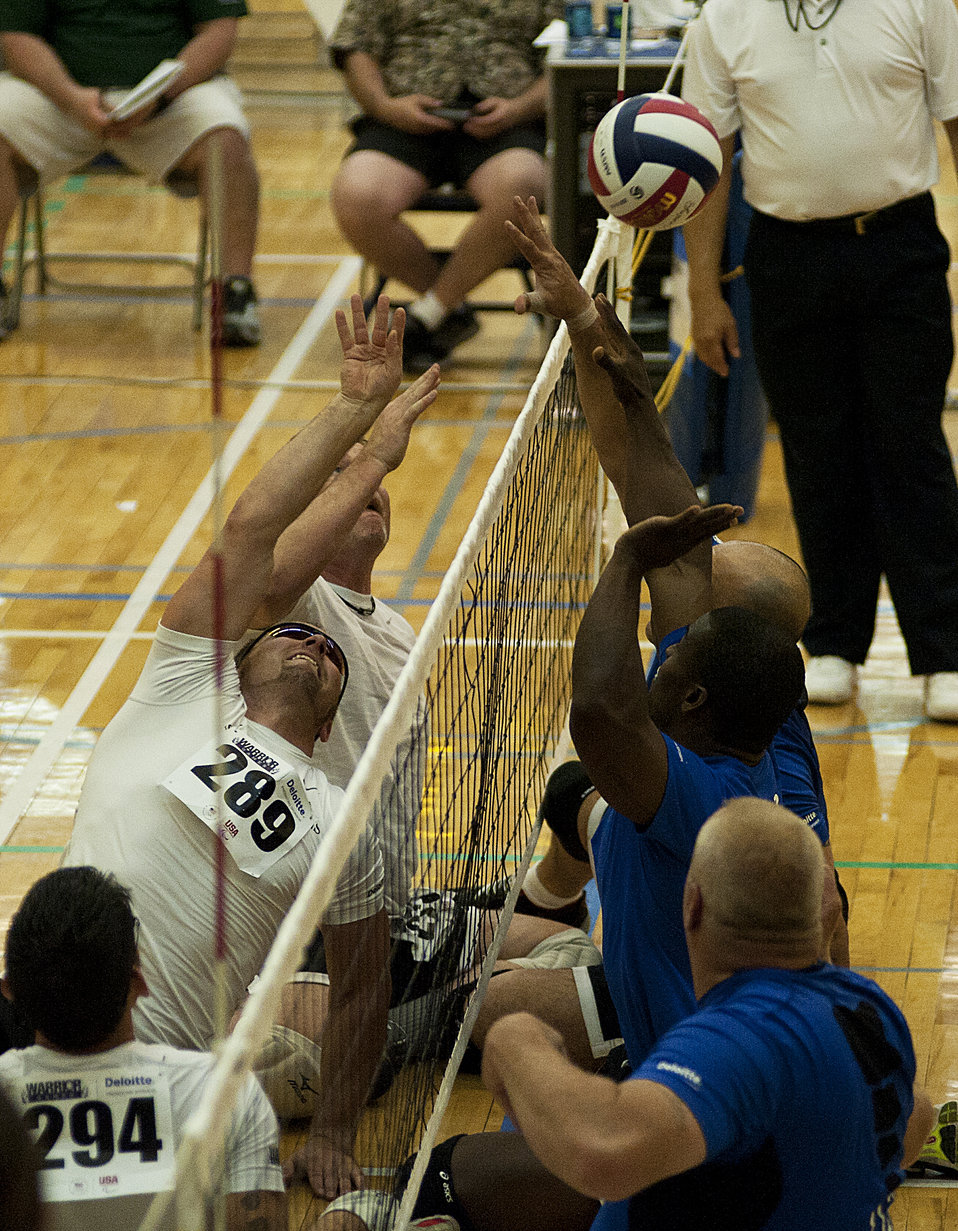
Warrior Games

Members of the Air Force and Special Operations Command sitting volleyball teams battle for the bronze medal during the 2012 Warrior Games at the U.S. Air Force Academy in Colorado Springs, Colo., May 3, 2012. Air Force won by a score of 25-12 and 25-20.